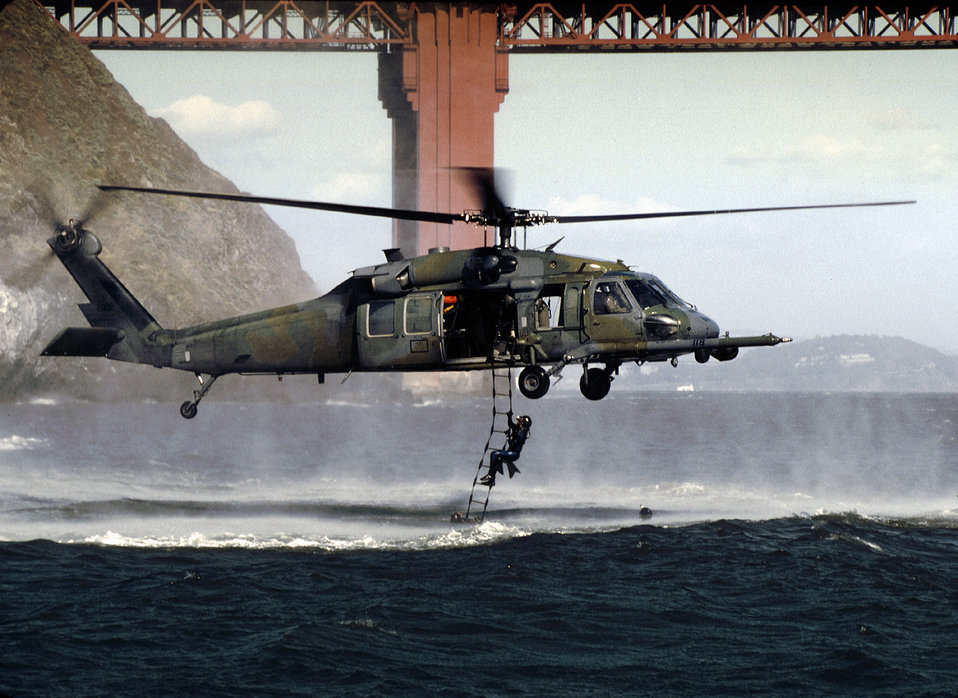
Golden Gate rescue

SAN FRANCISO -- California Air National Guard pararescuemen of the 129th Rescue Wing, Moffett Federal Airfield, Calif., climb up a moving rope ladder, from the chilly waters outside the Golden Gate Bridge, up to a HH-60G Pave Hawk. Tech. Sgt. Mike Sampognaro, flight engineer, monitors the training mission from the troop door. Hovering only six feet above the waves, Lt. Col. Thomas Laut must fly with extreme care as he deals with gusting winds, sea spray, sun glare, and sea swells, as he maintains a